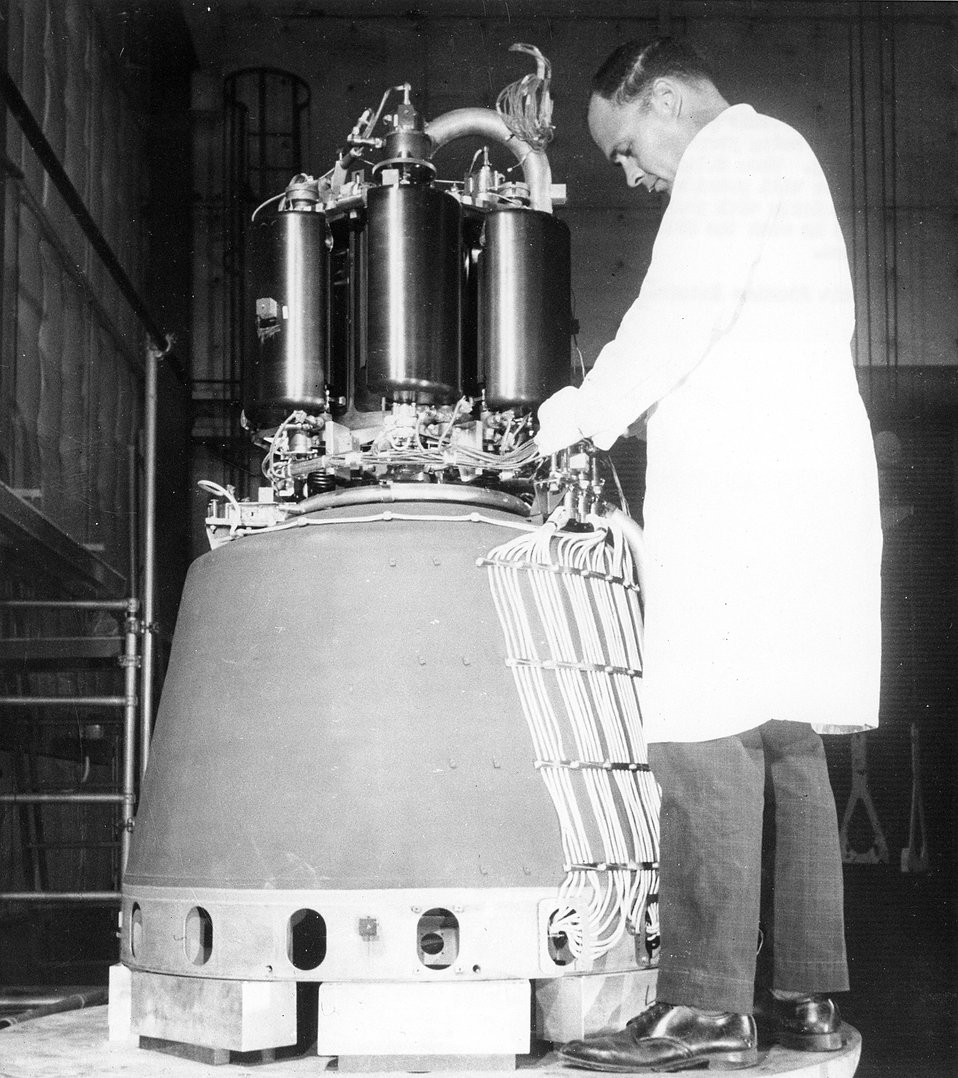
This photo shows a prototype SNAP 8 reactor being prepared for shock and vibration testing.